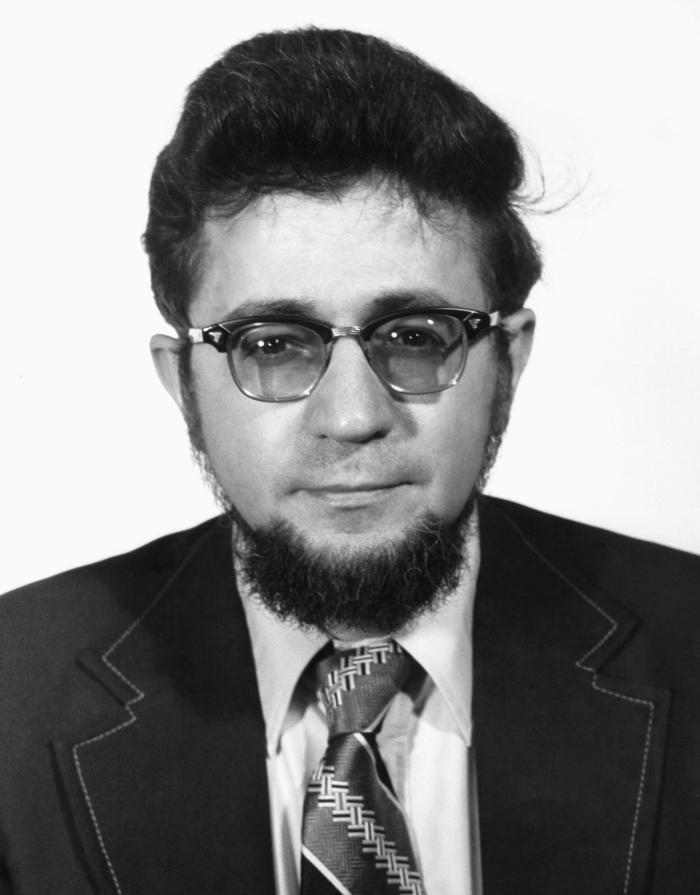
This is former Centers for Disease Control and Prevention administrator and EIS Officer Justin Lyle Conrad, M.D.